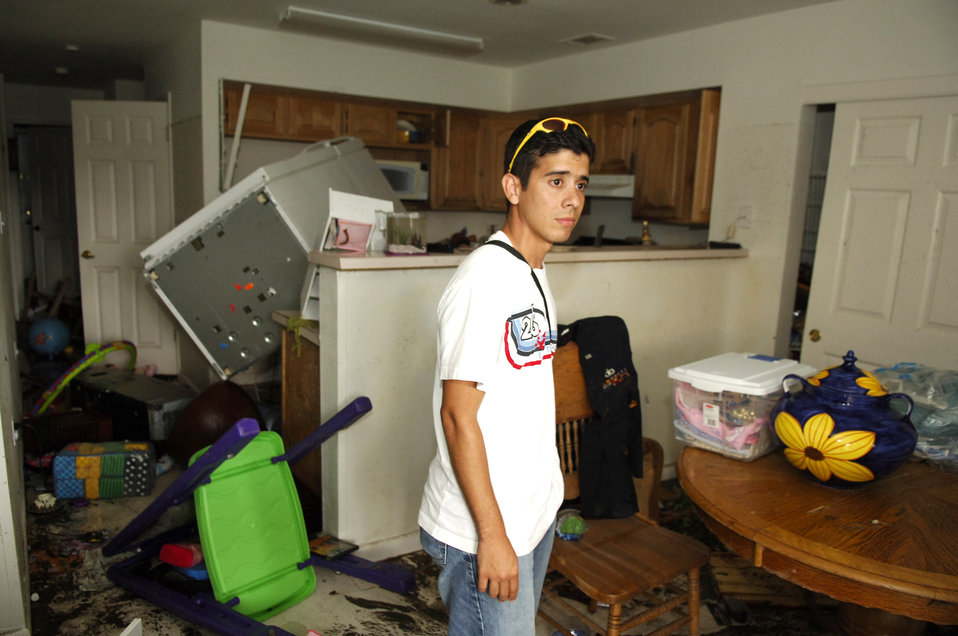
Displaced Airmen return to Keesler AFB for first time after hurricane

KEESLER AIR FORCE BASE, Miss. -- Staff Sgt. Jose Espola-Negron looks around his on-base house in disbelief. Most of his belongings were ruined from flooding in the aftermath of Hurricane Katrina. Before returning here from Eglin Air Force Base, Fla., where his family evacuated to before the storm, the only information he had about his house was that it had taken in a lot of water. During the highest point of flooding, more than 6 feet of water was in his home. Sergeant Espola-Negron is an air traffic control instructor with the 334th Training Readiness Squadron here.